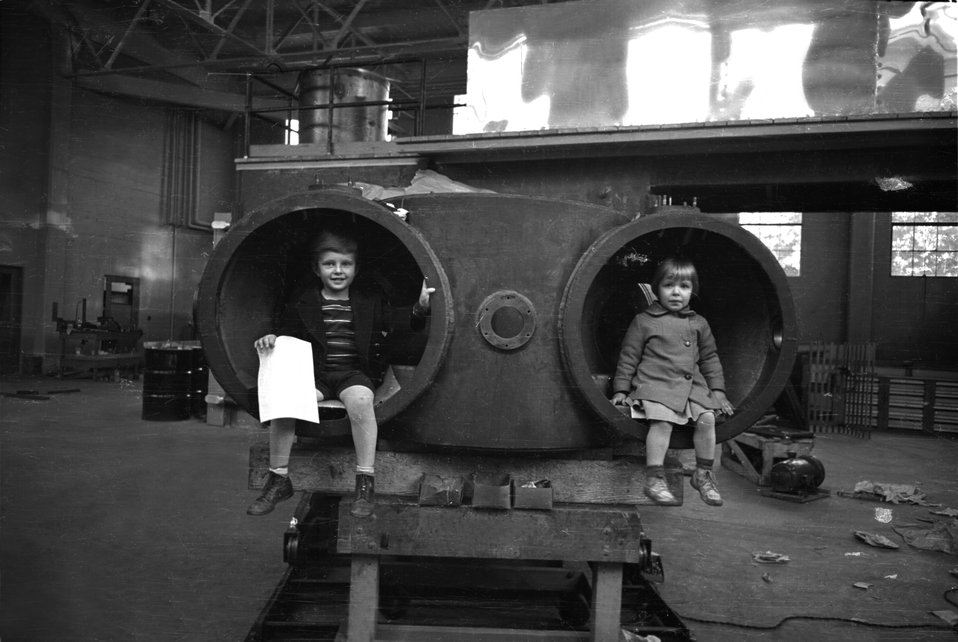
Inside the 60-Inch Cyclotron

In this 1939 photo, Eric and Margaret Lawrence are sitting inside the tank of something called the 60-inch cyclotron -- a machine invented by their father, Ernest Lawrence. The cyclotron is a unique circular particle accelerator, which Lawrence himself referred to as a 'proton merry-go-round.' In reality, the cyclotron specialized in smashing atoms. Fun facts: this cyclotron contains a magnet that weighs 220 tons, and experiments conducted on this very machine led to the discovery of plutonium and Nobel Prizes for researchers Glenn Seaborg and Melvin Calvin.